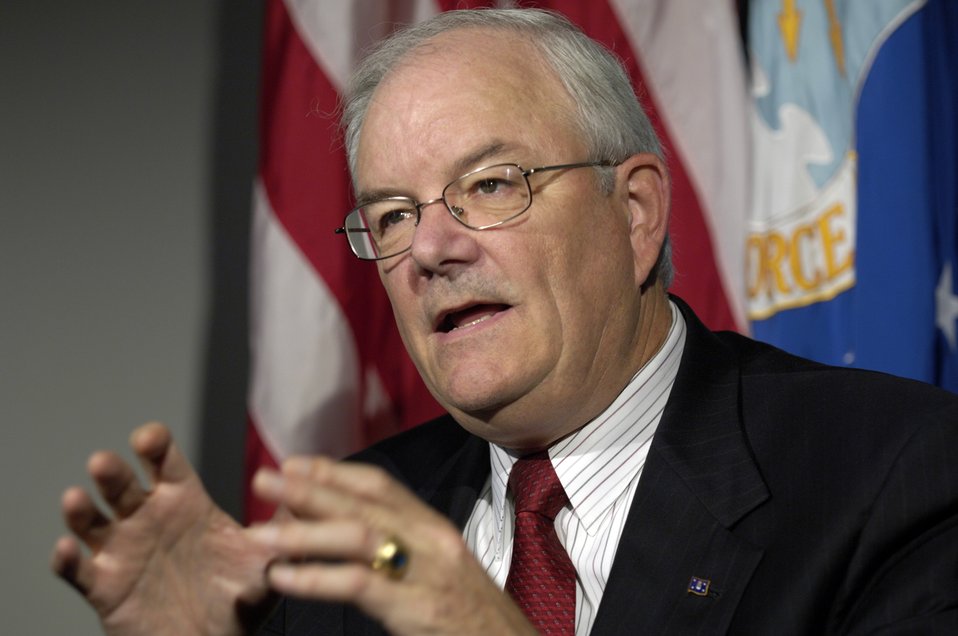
Secretary of the Air Force Michael Wynne interview

WASHINGTON (AFPN) -- Newly confirmed Secretary of the Air Force Michael W. Wynne talks about some of the early goals he has for the Air Force during an interview in his Pentagon office, Oct. 28.